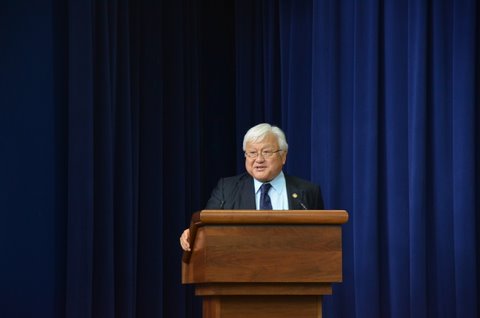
Rep. Mike Honda

WH 2012 World Hepatitis Day Event